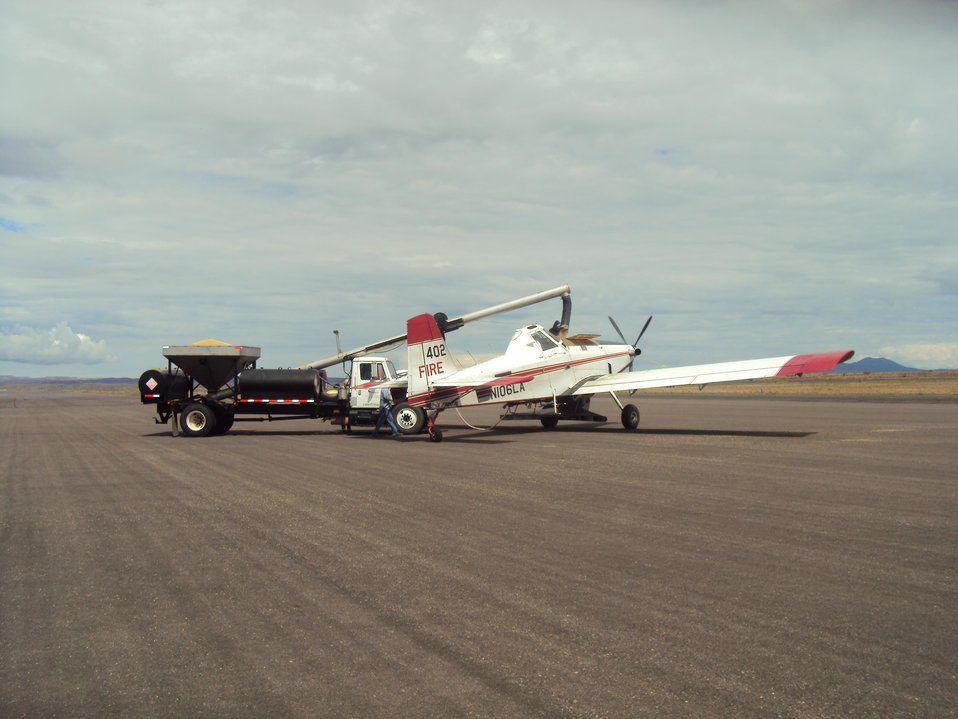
Seed is loaded into the Air Tractor for aerial seeding of severe burned areas of the Silver Fire. The Silver Post Fire response has the Burned Area Emergency Response (BAER) team beginning operations to seed acres of high burn severity and to mulch additional acres. Seeding reduces effects to downstream life, property, and infrastructure by reducing erosion and runoff. Areas of high burn severity are to be seeded with a quick germinating, non-persistent annual cereal barley that would provide rapid ground cover. A small percentage of native perennial species would also be included to give the burned area a jump start in natural recovery, and provide for long-term ground cover. Mulch is the most effective treatment for controlling erosion and runoff, as it provides immediate ground cover. Mulch also assists in stabilizing soil in and around these areas. Aircraft for seeding operations will be based at the Gila National Forest Air Tanker Base.